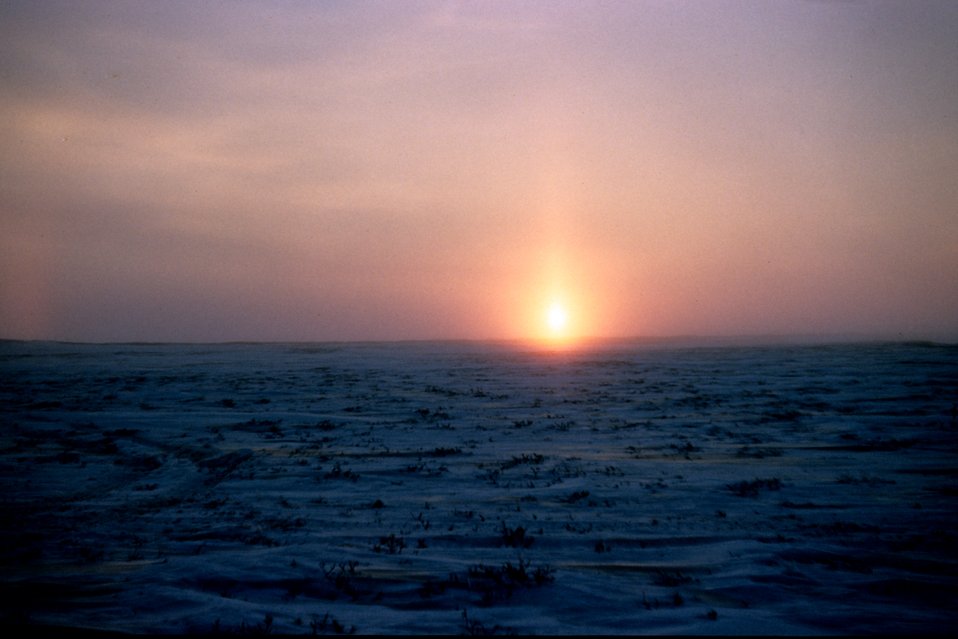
A sun pillar forms as the sun rises over the Arctic plain